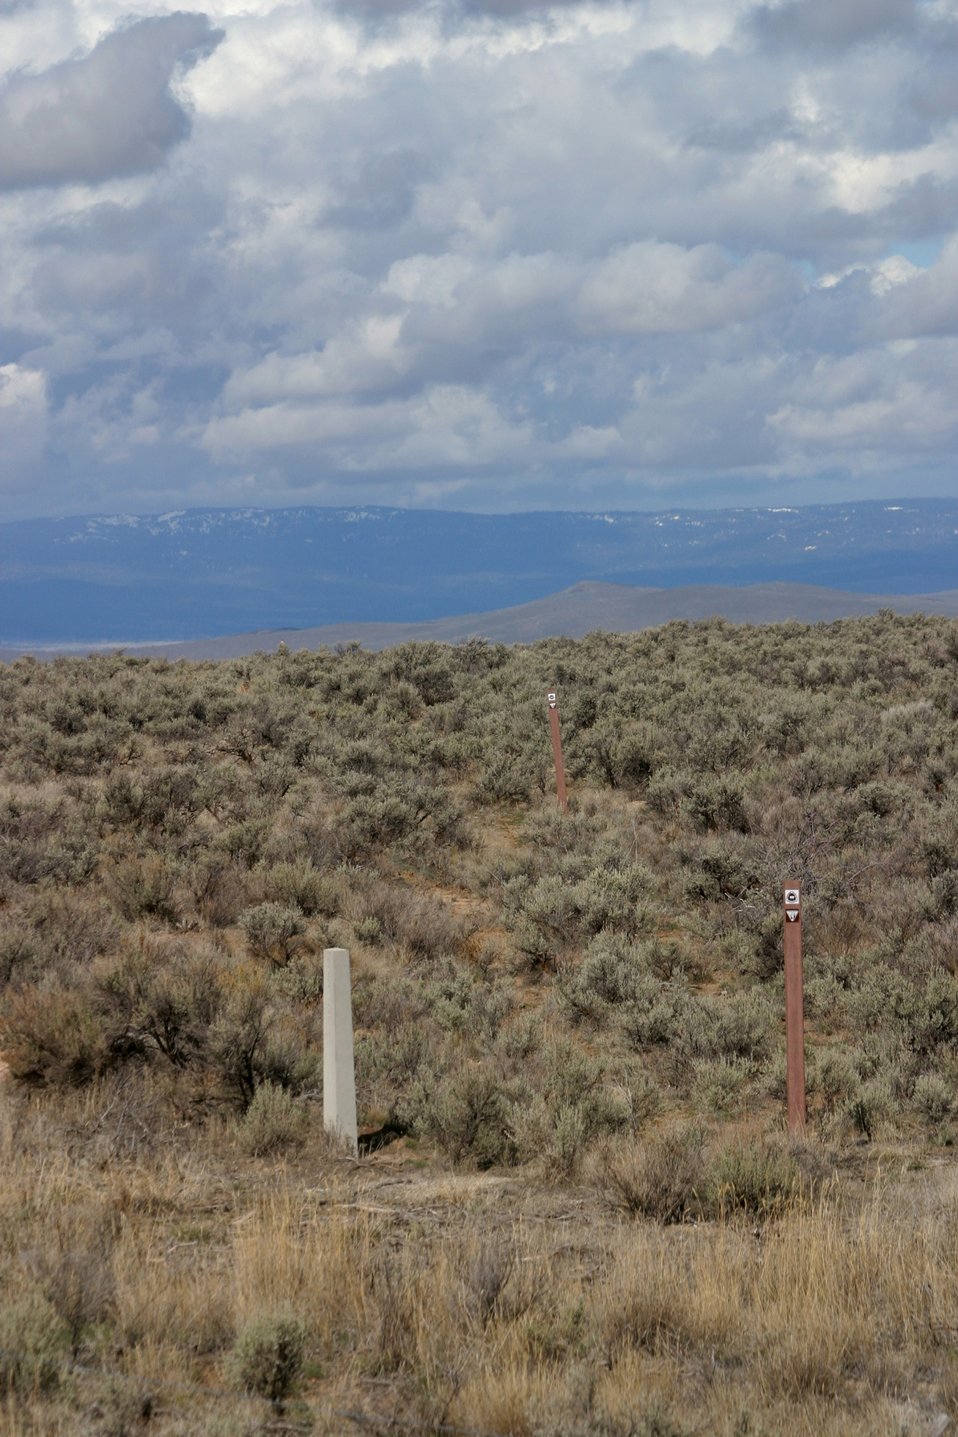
Oregon Trail ruts below the National Historic Oregon Trail Interpretive Center.